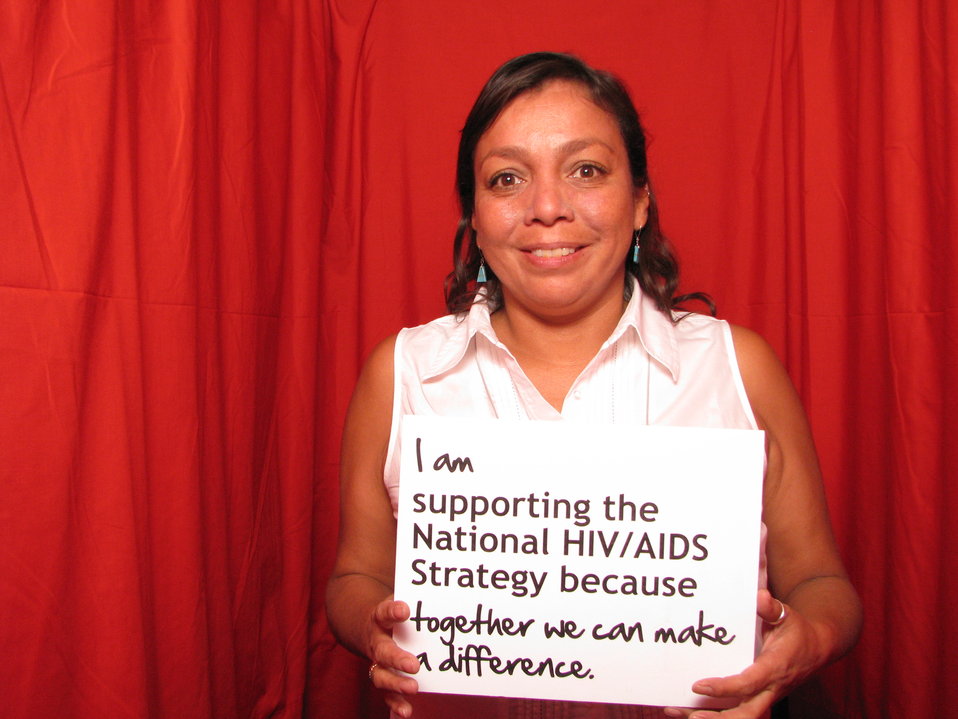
I am supporting the National HIV/AIDS Strategy because together we can make a difference.

From the AIDS.gov photo booth at the U.S. Conference on AIDS, September 2010 (Orlando, FL).